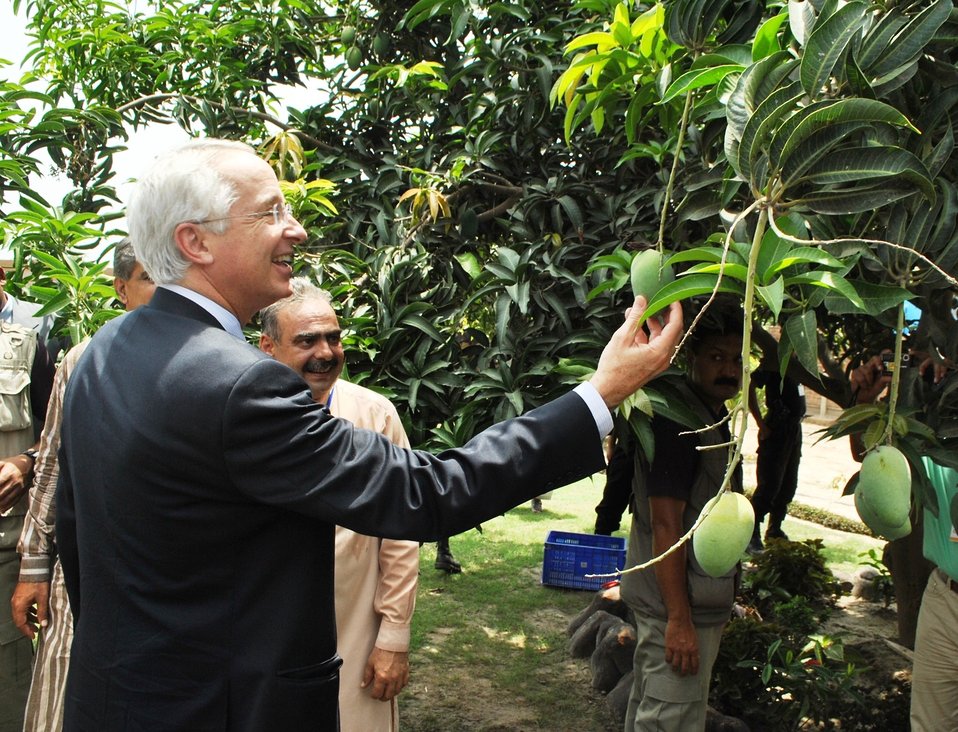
U.S. Helps Pakistani Farmers Export Mangos

Multan, July 24, 2011 - U.S. Ambassador Cameron Munter inaugurated a new U.S.-funded mango processing line at Lutfabad Farm. As a result of U.S-provided infrastructure upgrades, 13 farms in Southern Punjab will be able to export delicious Pakistani mangos to foreign markets. The U.S. partnership with mango producers is expected to yield a 30 million dollar increase in mango export revenue in the next two years, three million dollars of new investment, and 6,000 new jobs in Punjab and Sindh.